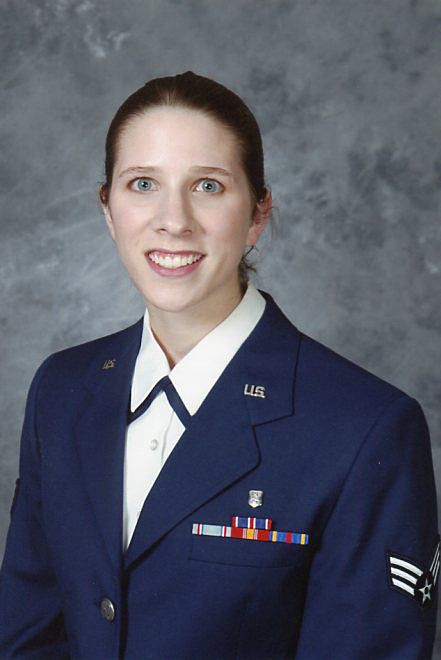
Stephanie Walden-Southwest Region

After serving in the Air Force (1999-2003), Stephanie Walden is now a Biological Technician at Cibola National Wildlife Refuge in Cibola, Arizona.